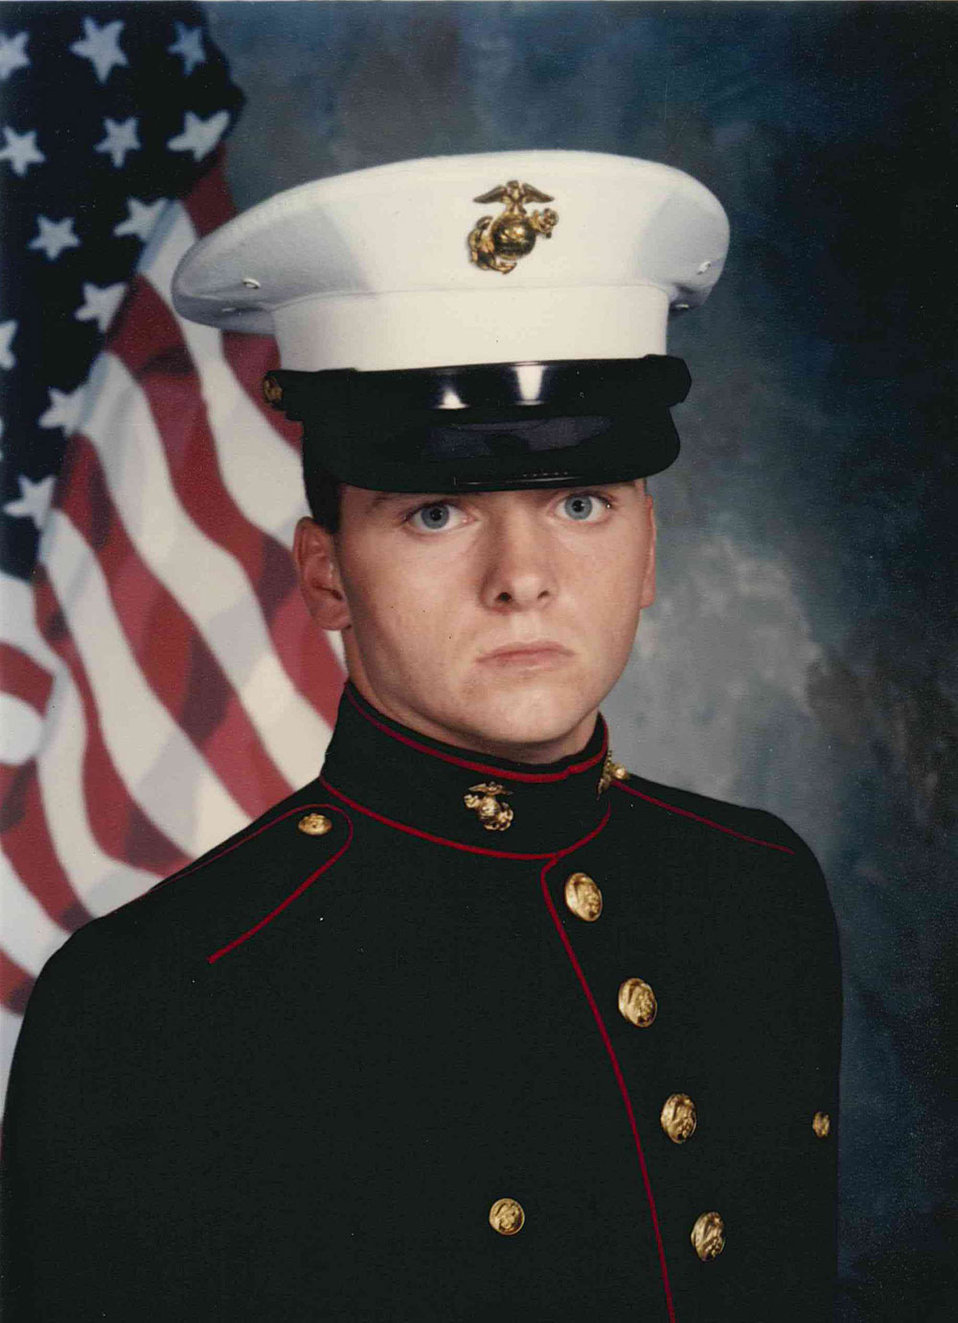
John Liles served on an Expeditionary Unit in the 2nd Battalion, 3rd Marines. He is currently an Engineering Equipment Operator working for the Partners for Fish and Wildlife Program at Willapa National Wildlife Refuge.